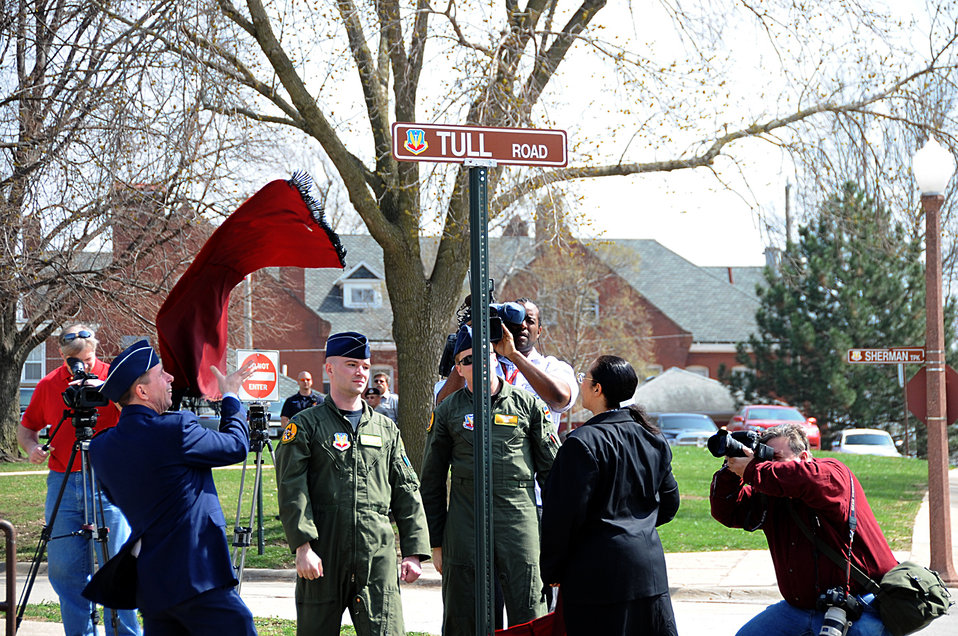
Tull Road dedication

Brig. Gen. John N.T. Shanahan, the 55th Wing commander at Offutt Air Force Base, Neb., and Dr. Janet Tull, the daughter of retired Lt. Col. Harrison